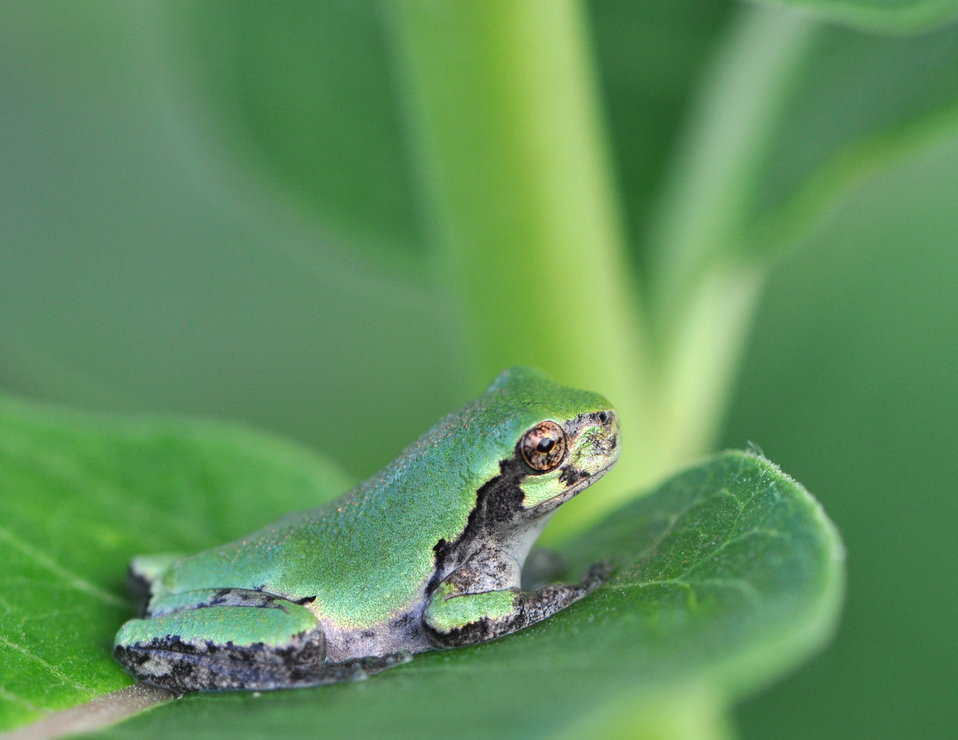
Eastern Gray Treefrog at Horicon National Wildlife Refuge